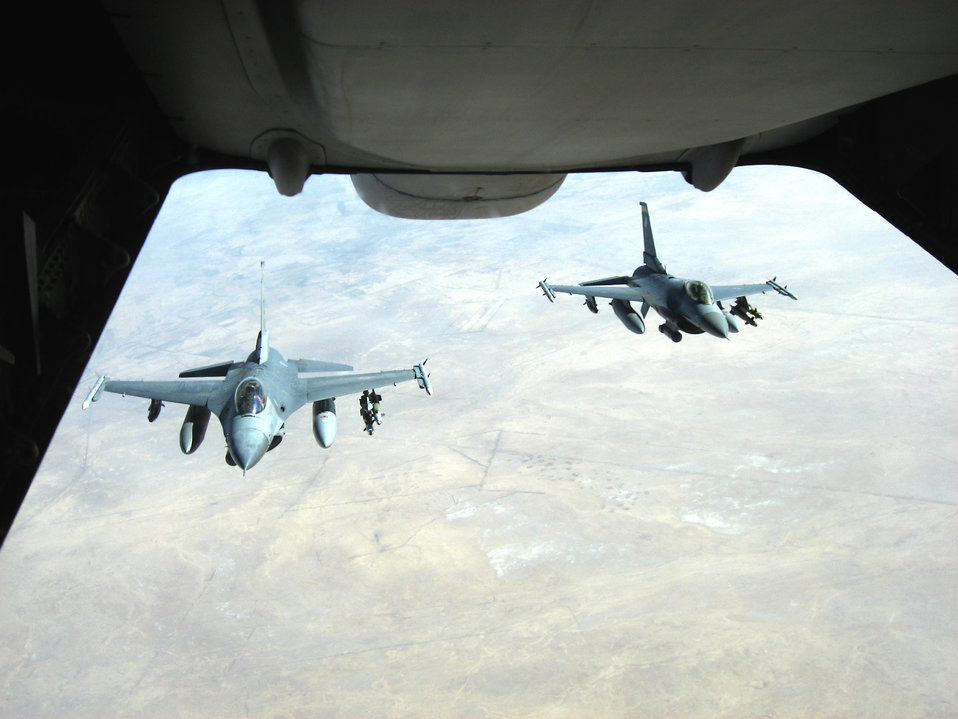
Refueling the fight

Two F-16 Fighting Falcons from Balad Air Base, Iraq, pull behind a KC-10 Extender to receive fuel before conducting a mission over Iraq Nov. 20. The KC-10 refueled both jets that afternoon in support of Operation Iraqi Freedom. The KC-10 aircrew is deployed in support of the 380th Air Expeditionary Wing.